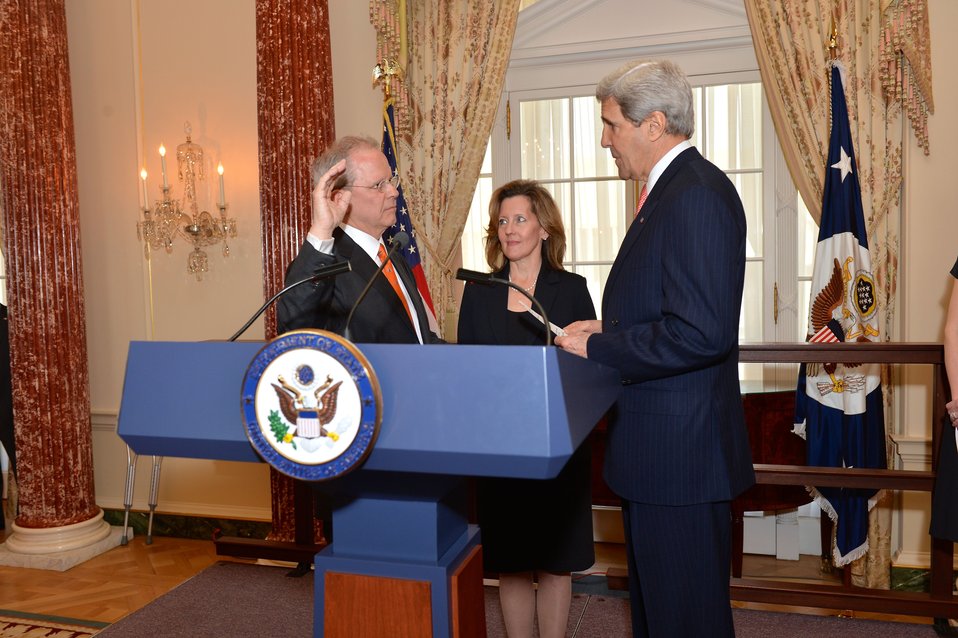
Secretary Kerry Swears in Ambassador Broas

With Julie Broas looking on, U.S. Secretary of State John Kerry swears in Tim Broas as U.S. Ambassador to the Netherlands at the U.S. Department of State in Washington, D.C., on April 10, 2014.